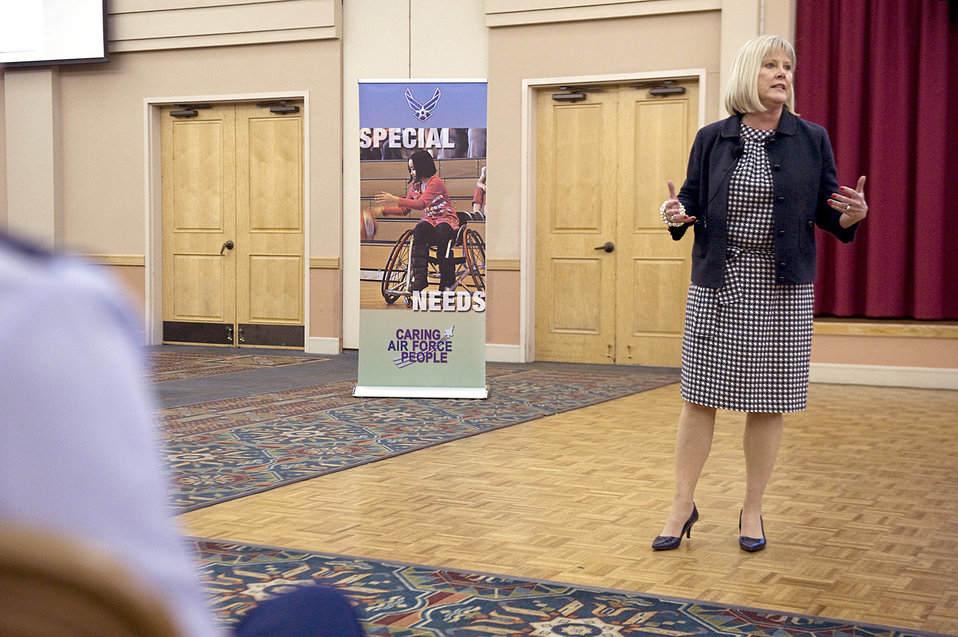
Suzie Schwartz at EFMP/SLO course

Suzie Schwartz answers question during the Exceptional Family Member Program and School Liaison Officer training course Mar. 10, 2011, at Lackland Air Force Base, San Antonio. The two programs are geared toward taking care of families with special needs and childhood education respectively. Mrs. Schwartz is the wife of Air Force Chief of Staff Gen. Norton Schwartz.